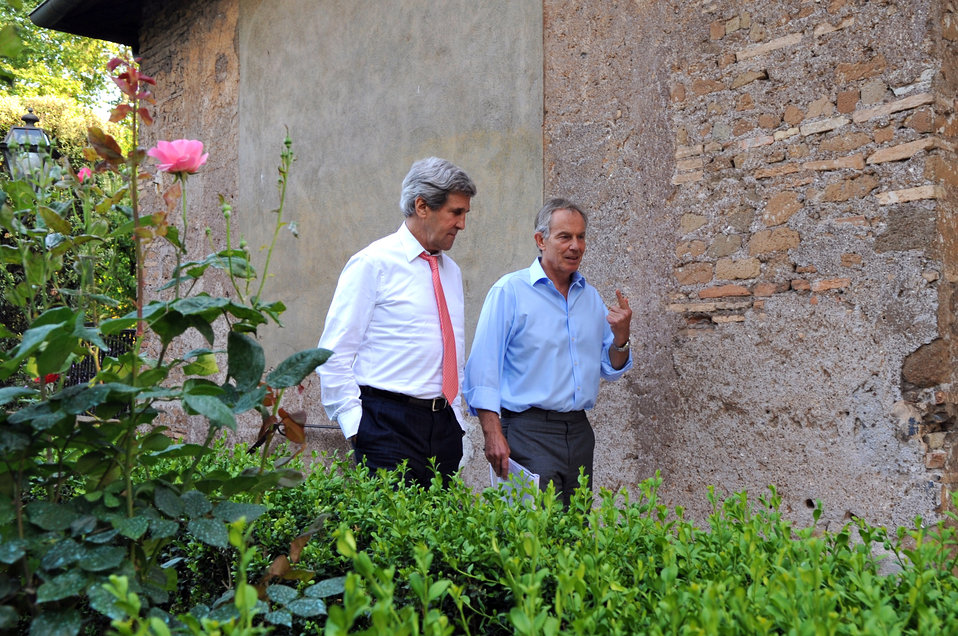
Secretary Kerry and Quartet Representative Blair Discuss Middle East Peace

U.S. Secretary of State John Kerry discusses Middle East peace with Quartet Representative Tony Blair at the Villa Taverna, the U.S. ambassador's residence in Rome, Italy, on May 9, 2013.